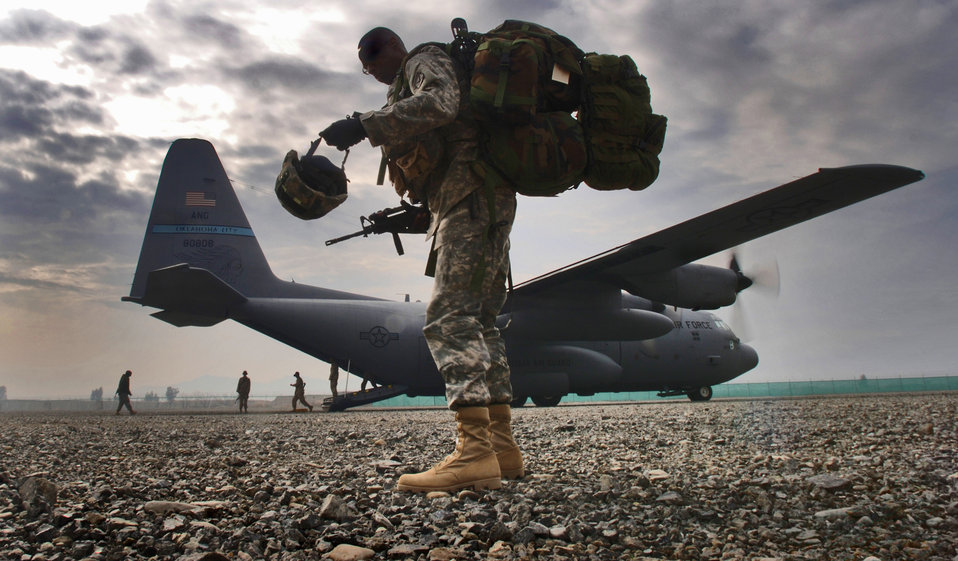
All aboard

U.S. Army Sgt. 1st Class Ricky Bryant boards a C-130 Hercules at Bagram Air Base, Afghanistan, for a flight to Forward Operations Base Salearno, Afghanistan, on Wednesday, March 8, 2006. The aircraft and crew are from the Oklahoma Air National Guard deployed to the 774th Expeditionary Airlift Squadron at Bagram AB.